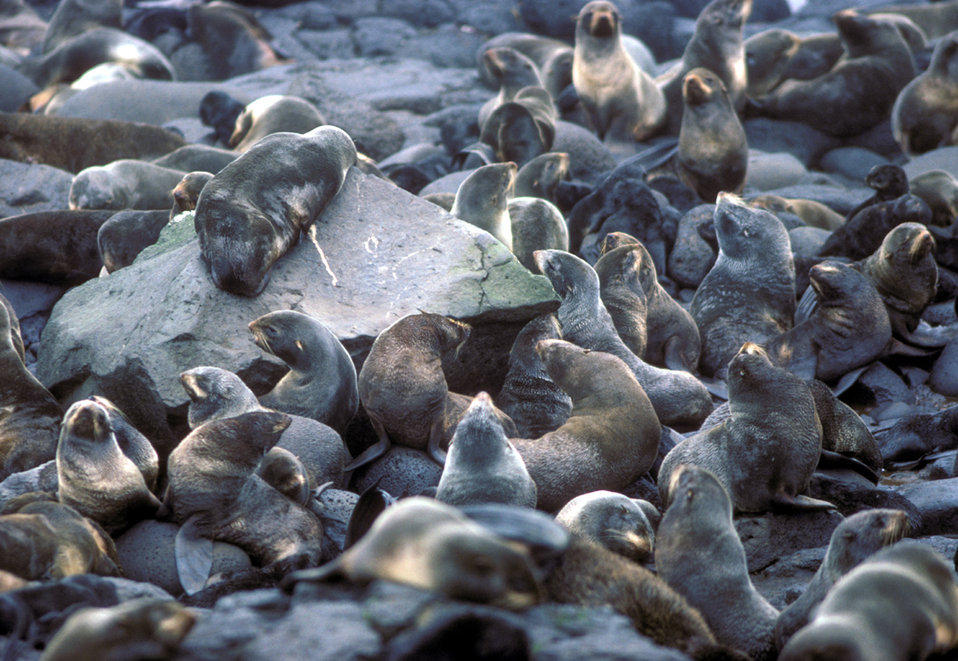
Seal

St. Paul Island fur seal colony, Pribilofs.